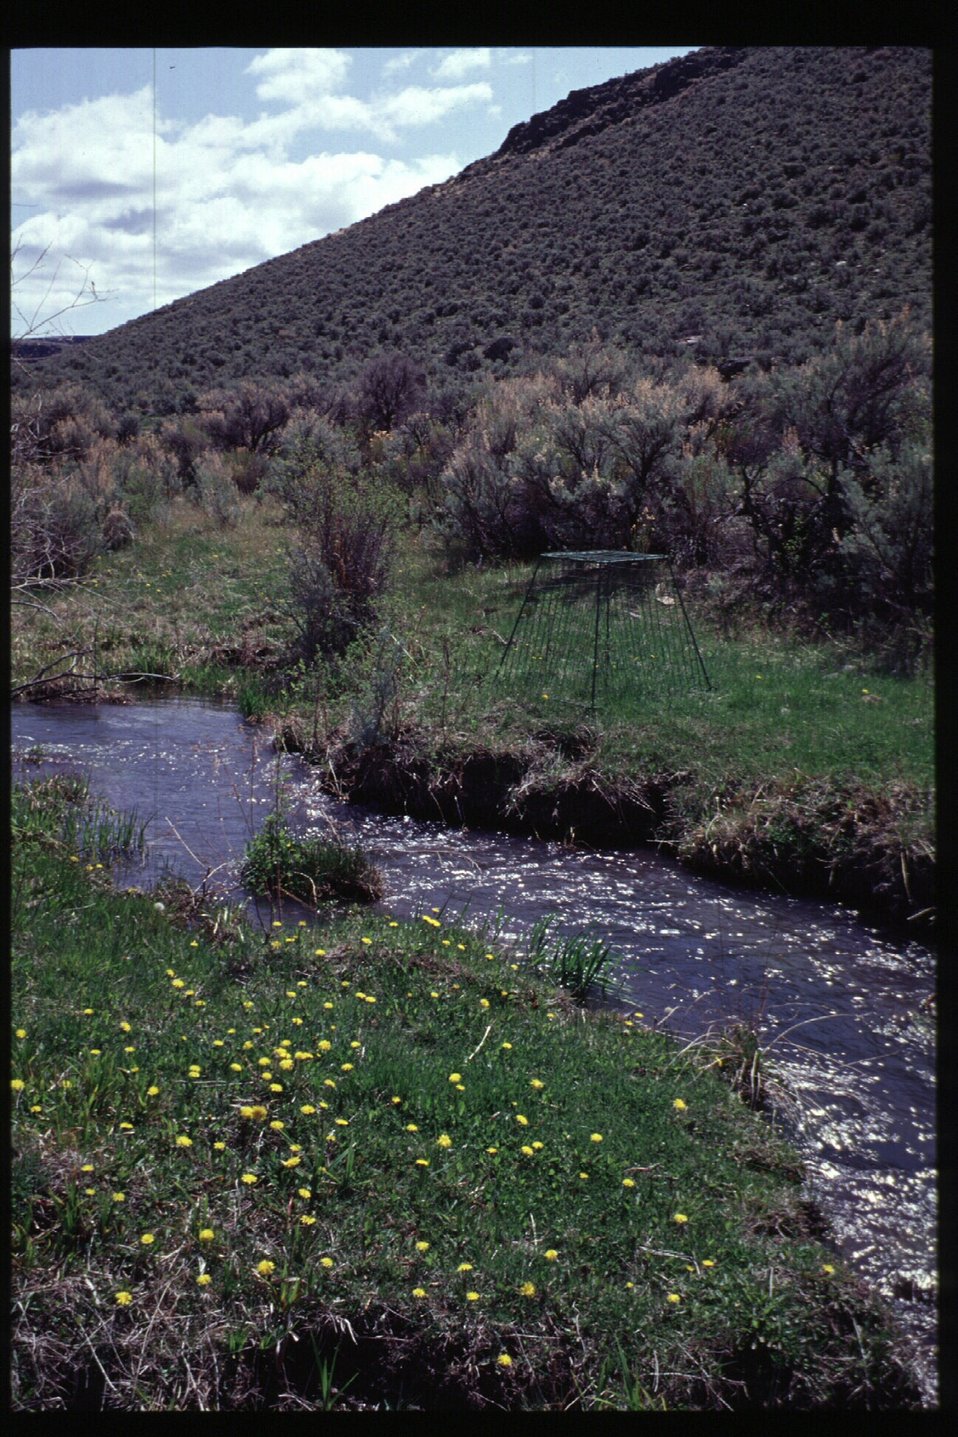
Riparian RACS Tour on Range Health Assessment Owyhee Field Office LSRD Lower Snake River District